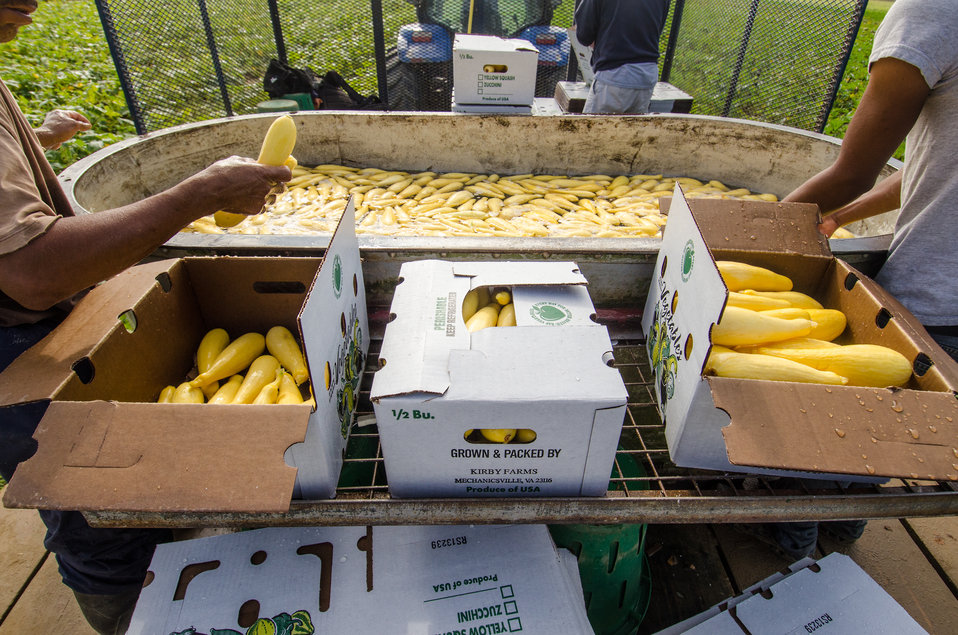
Migrant workers rinse and pack just-picked yellow squash into 1/2-bushel boxes at Kirby Farms in Mechanicsville, VA on Sep. 20, 2013. Kirby Farms is a third-generation family farm that covers 500 acres, and generates produce and grains on a year-around operation.